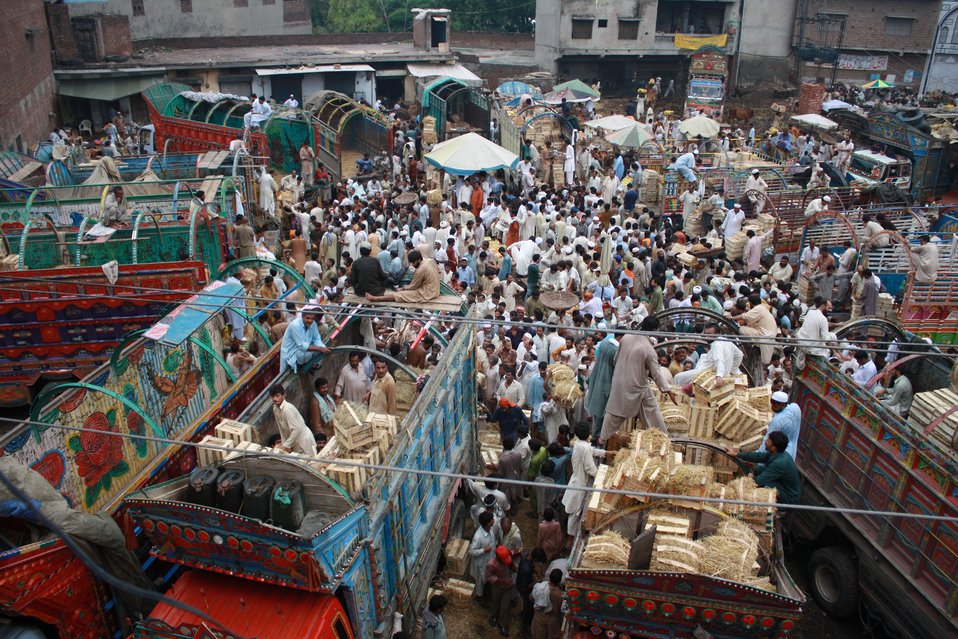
USAID Firms Project's Agriculture Marketing Reforms - 1

Traders and commission agents participate in the fruit action at the start of a busy day at the wholesale fruit mandi as soon as the trucks unload the fresh produce from the farms. Retailers can be seen displaying their fresh fruits for the encroachers who are busy negotiating rates.